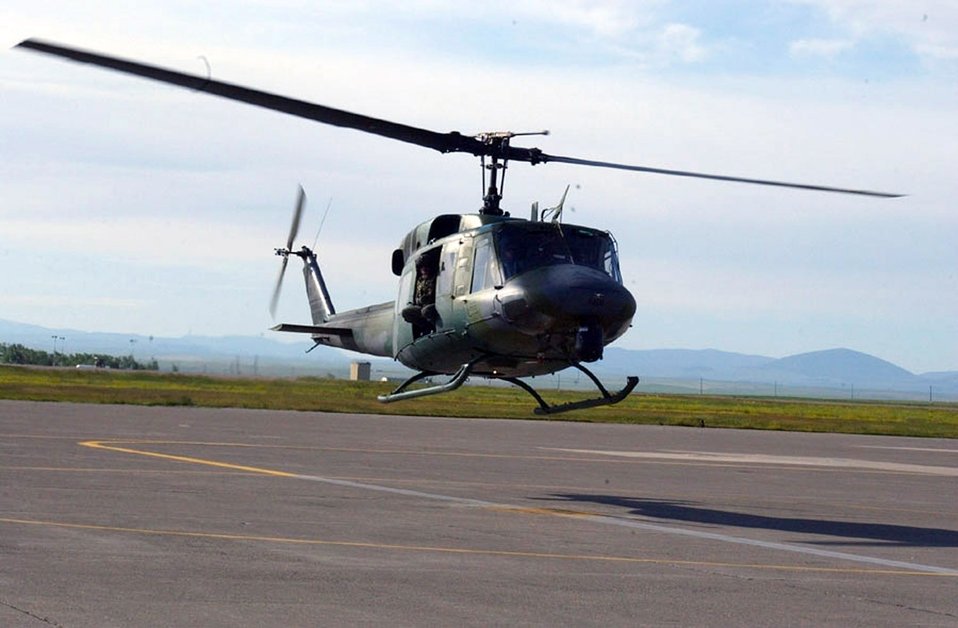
Malmstrom Airmen rescues injured hiker on mountain peak

A UH-1N Huey helicopter prepares to land at Malmstrom Air Force Base, Mont. A crew assigned to the 40th Helicopter Squadron from Malmstrom AFB rescued an injured hiker Aug. 10 near Cook City, Mont., just north of the Montana-Wyoming border.